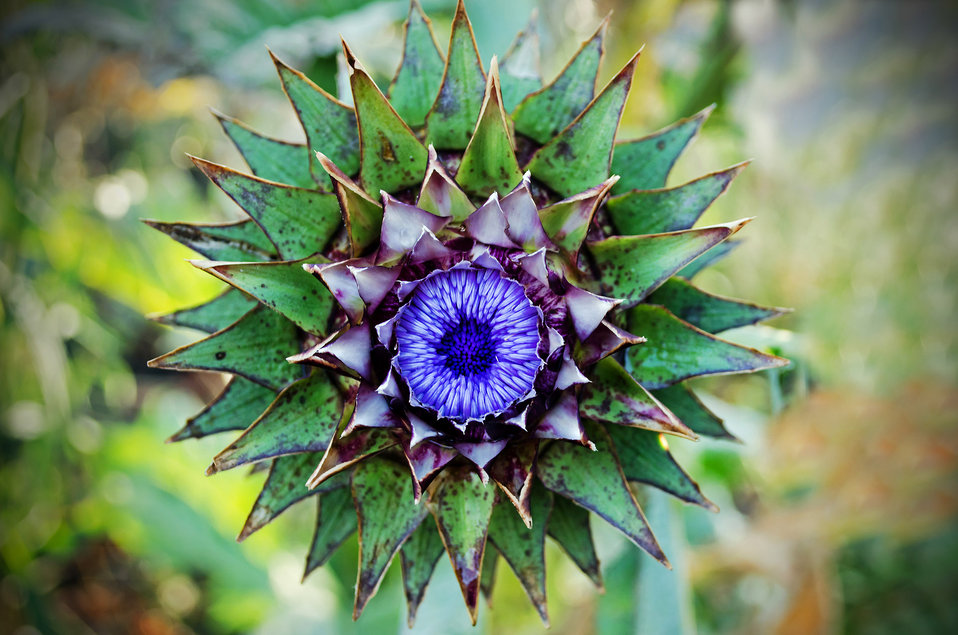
Thistle - macro.